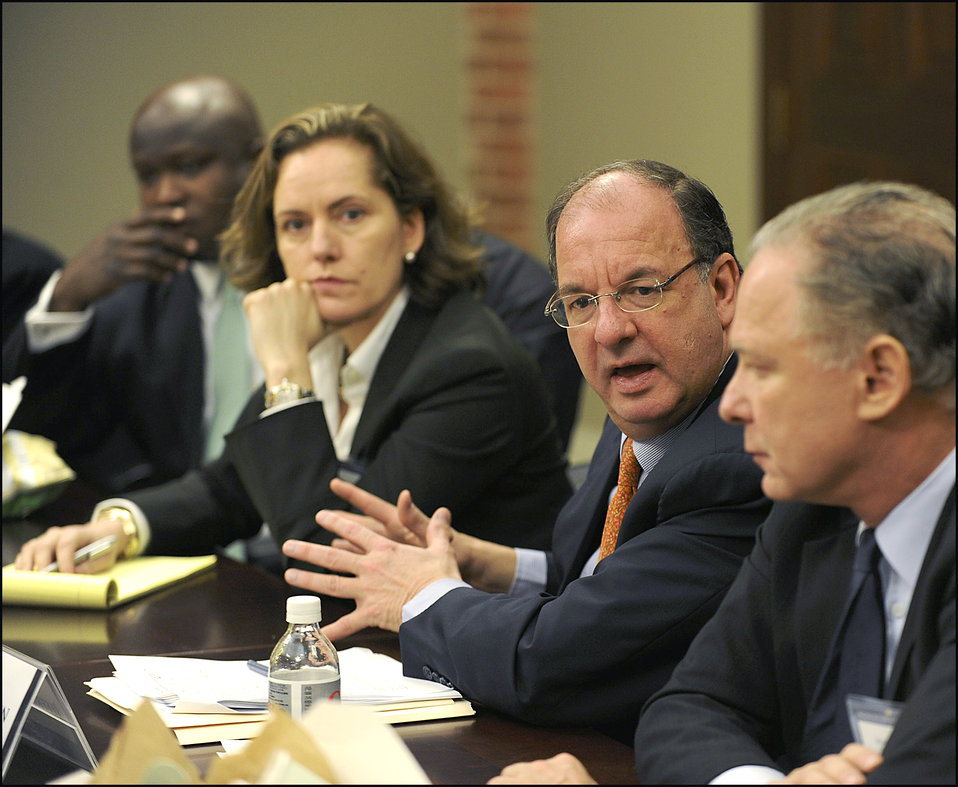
Access to Capital Conference

Under Secretary of the Treasury for Domestic Finance Jeffrey Goldstein led a breakout session with conference attendees on 'Financing Small Cap Companies: IPOs, Credit, and Alternative Liquidity Platforms.'